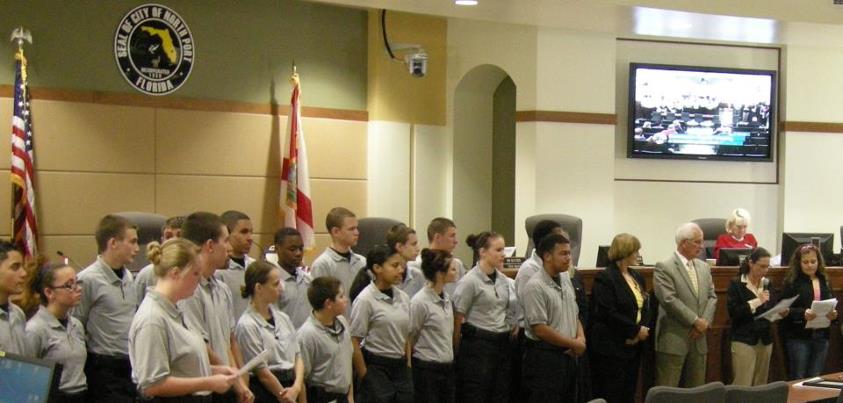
City of North Port, FL

Police Explorers, members of North Port Drug-Free Youth, are recognized at a North Port City Commission meeting Monday as Mayor Linda Yates reads a proclamation declaring Jan. 28-Feb. 3 'National Drug Facts Week,' in which teens are encouraged to ask questions about drugs and drug abuse and get scientifically based answers without judgment. More than 1,600 North Port youth in D-Fy have committed to being drug-, alcohol- and tobacco-free since May 2010.